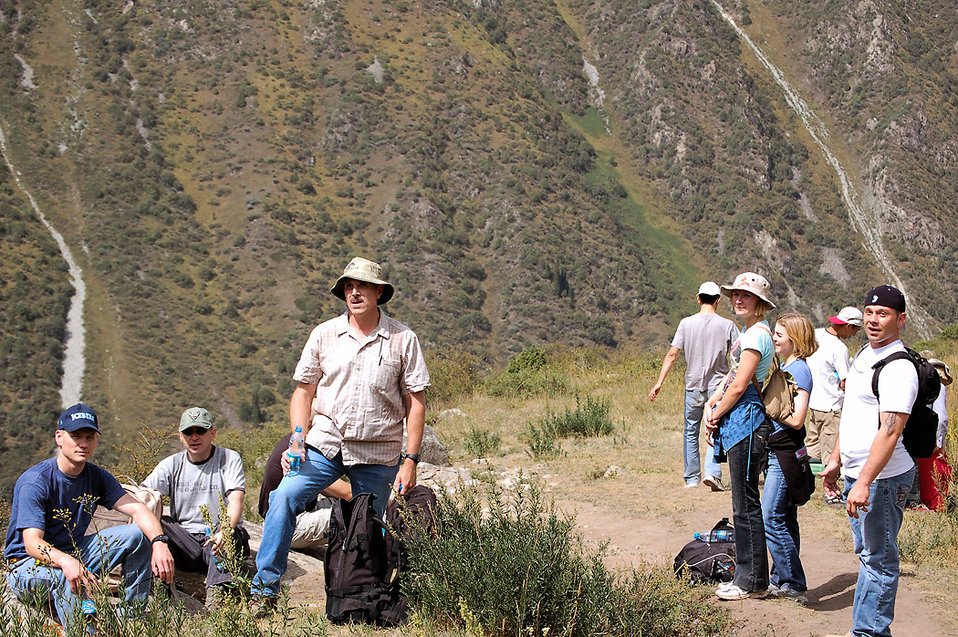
Program strengthens U.S., host-nation relationships

Manas servicemembers take a breather during a hike through Kyrgyzstan's Ala Archa Gorge and National Park. Deployed servicemembers to Manas have a unique opportunity through the base International Tours and Travel office to frequent more than 40 locations ranging from hiking, horseback and dining trips throughout Kyrgyzstan and the city of Bishkek.